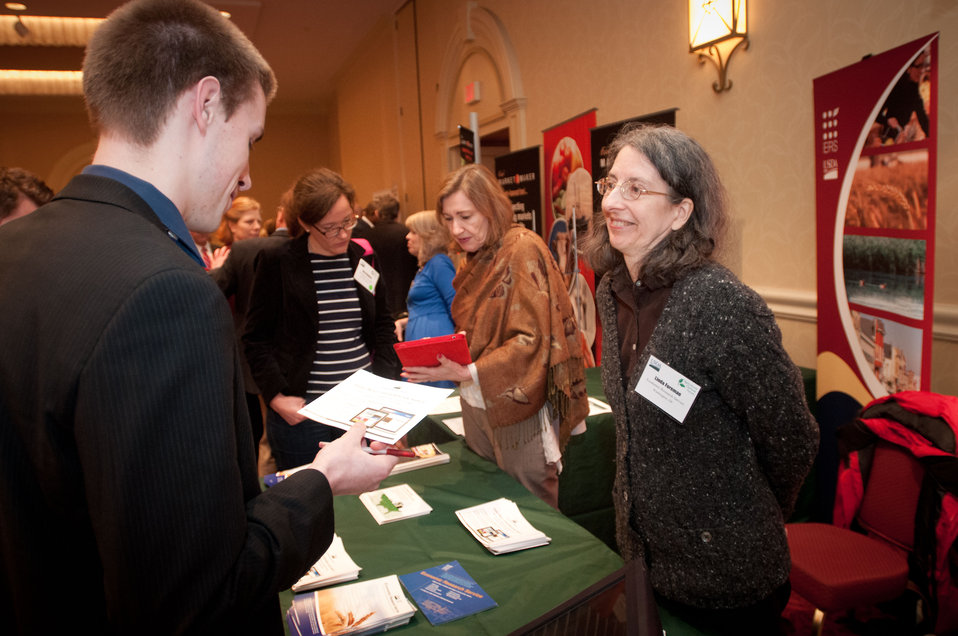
2013 Agricultural Outlook Forum, held at the Crystal Gateway Marriott Hotel, Arlington, Virginia on Thursday, Feb. 21, 2013. This annual Forum brings together producers, policymakers, business, government, and industry leaders to meet, exchange ideas, and discuss timely agriculture issues in the exhibit hall at the Ag Outlook Forum.